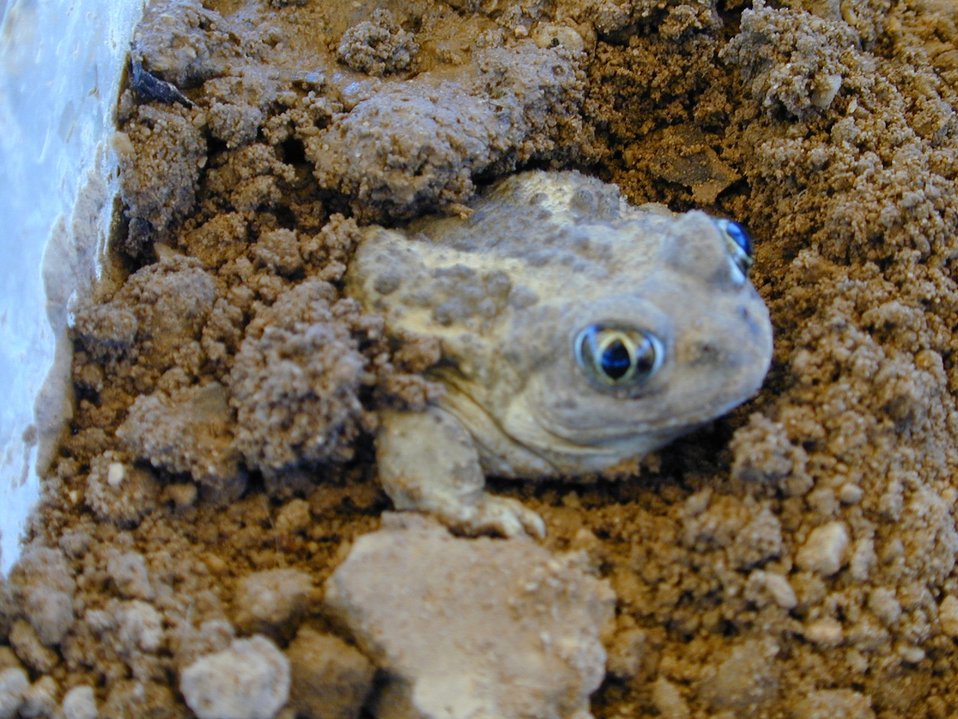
Environmental Education Fire Workshop Timberline High School Fall 2000